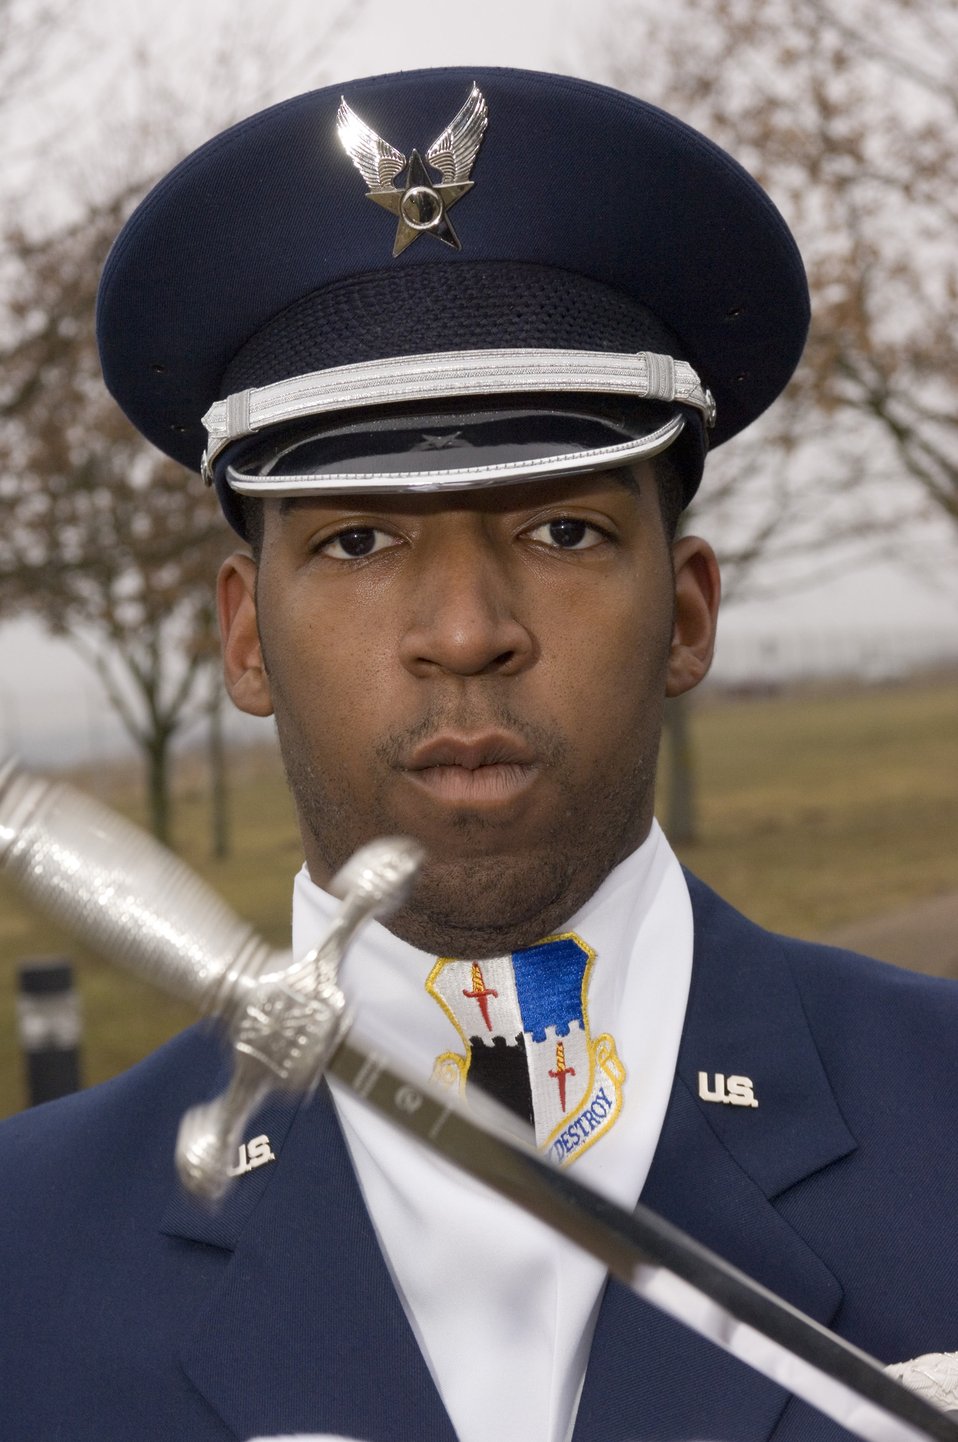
Airmen toss sabers to honor comrades

Senior Airman Bernard Price practices saber handling during practice at Spangdahlem Air Base, Germany, on Tuesday, March 21, 2006. Airman Price is a material control specialist with the 606th Air Control Squadron.